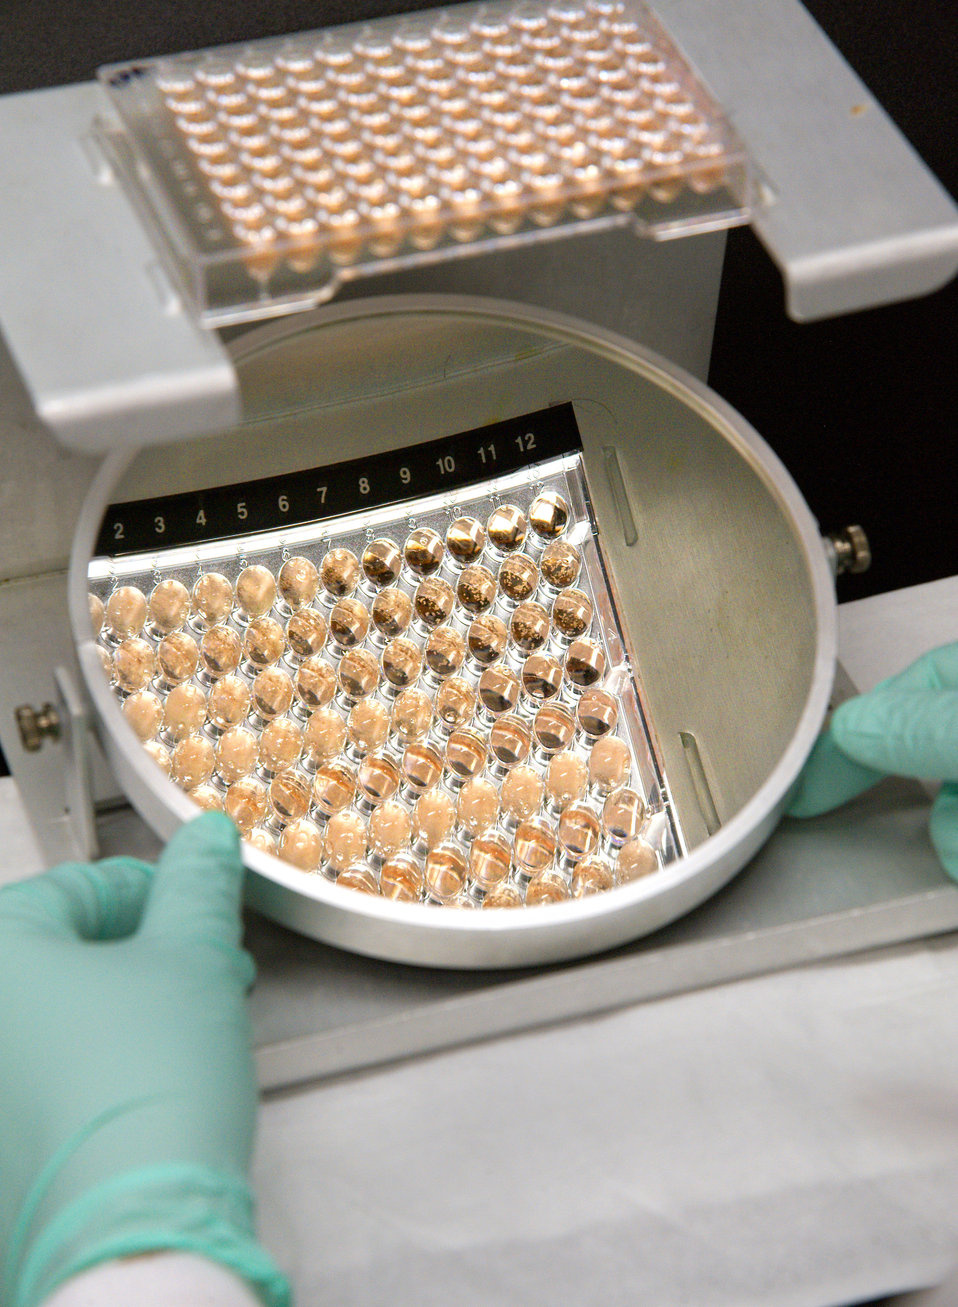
This image shows the hands of a Centers for Disease Control and Prevention (CDC) scientist (Naureen Iqbal) reading the results of an antifungal drug susceptibility test during the 2012 multistate fungal meningitis outbreak investigation. See PHIL 15153, for another view of Naureen Iqbal conducting this susceptibility test.